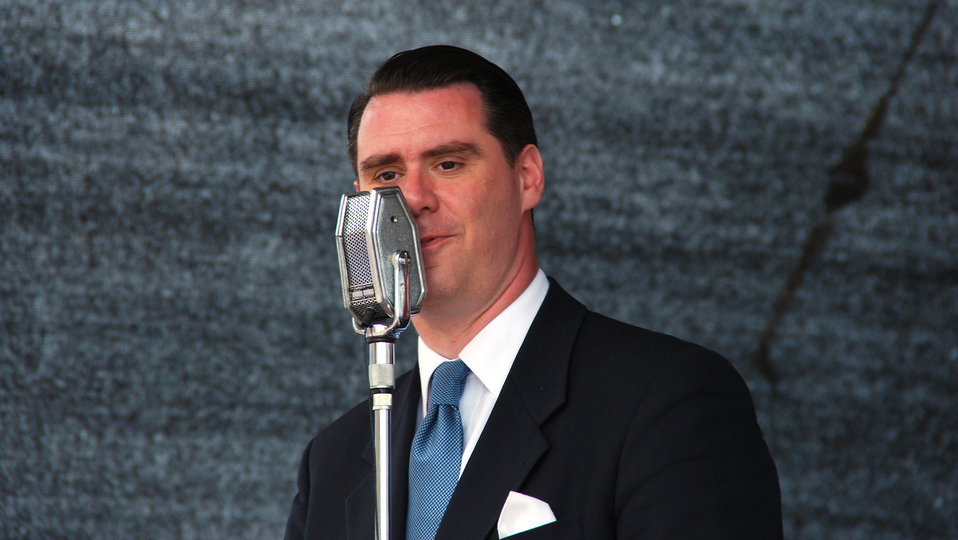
Andrej Hermlin, Deutscher Pianist und Bandleader